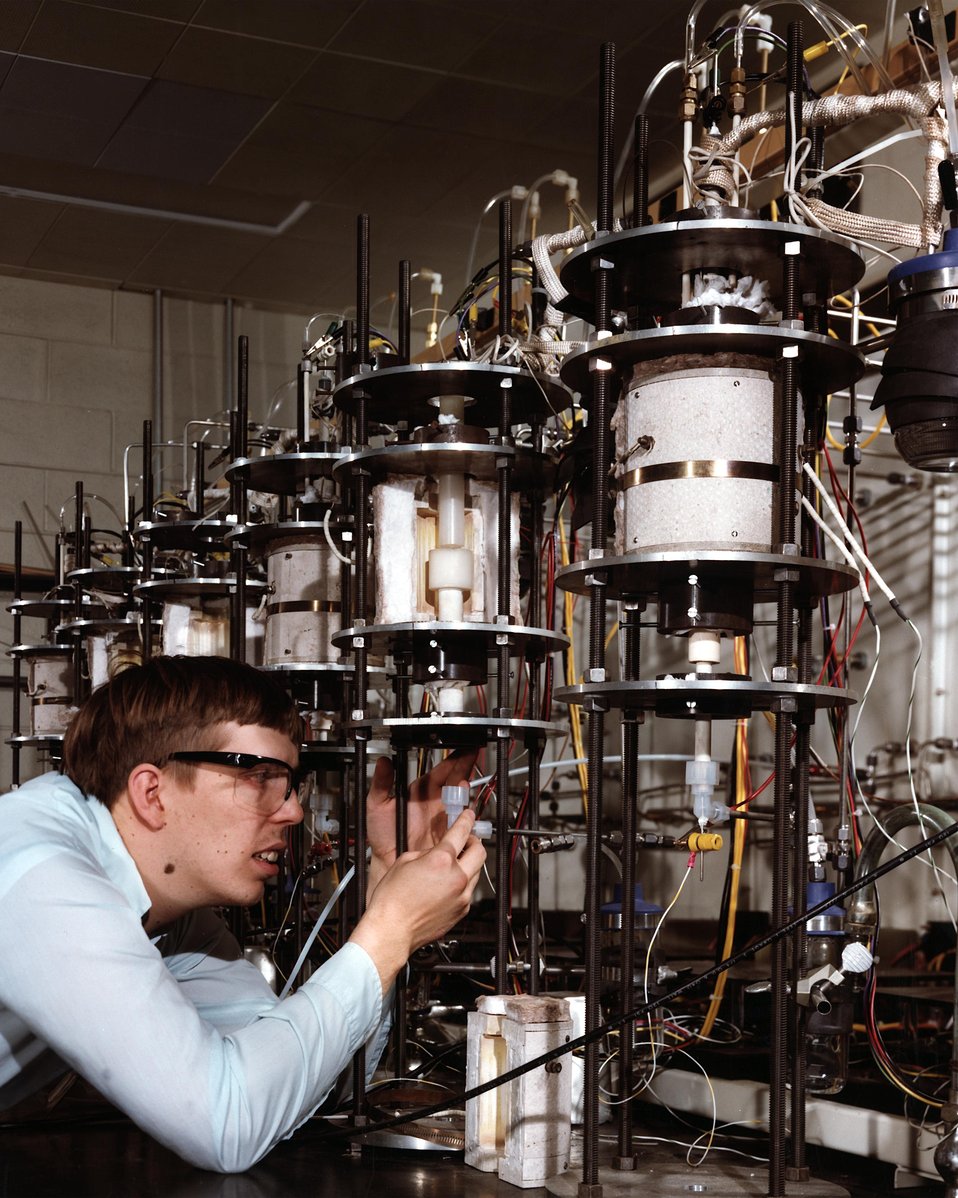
MOLTEN CARBONATE FUEL CELL ELEMENT TEST STATION (3 CM2 FUEL CELLS).

THE FUEL CELL CONSISTS OF AN ELECTROLYTE BETWEEN AN ANODE AND A CATHODE. HYDROGEN-RICH FUEL IS FED DOWN THE ANODE SIDE WHERE THE HYDROGEN LOSES ITS ELECTRONS, LEAVING THE ANODE WITH A NEGATIVE CHARGE. AIR IS FED DOWN THE CATHODE SIDE, WHERE ITS OXYGEN PICKS UP ELECTRONS, LEAVING THE CATHODE WITH A POSITIVE CHARGE. THE EXCESS ELECTRONS AT THE ANODE FLOW TOWARDS THE CATHODE, CREATING ELECTRIC POWER. MEANWHILE, HYDROGEN IONS ARE PRODUCED AT THE ANODE (WHEN ELECTRONS ARE LOST) AND OXYGEN IONS FROM THE CATHODE MIGRATE TOGETHER IN THE ELECTROLYTE. WHEN THESEIONS COMBINE, THEY FORM WATER. HOWEVER, BECAUSE OF THE HEAT OF THE CELL PROCESSES, THE WATER LEAVES THE CELL AS STEAM WHICH IS ONE OF THE FEW WASTE PRODUCTS OF THIS PROCESS. THIS IS THE BACK VIEW OF THE FUEL CELL ELEMENTS. AT THIS STATION, MR. G. A. JARVI TESTS DIFFERENT ANODE AND CATHODE MATERIALS AND CURRENT COLLECTORS WHILE USING VARIOUS FUELS.